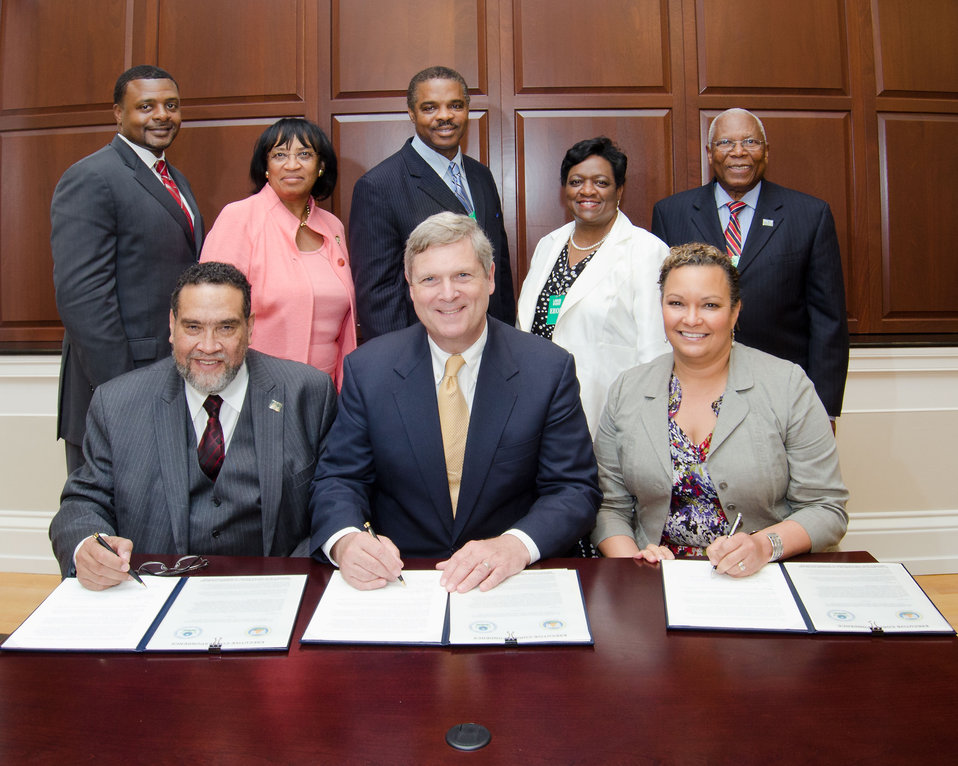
Left to right Tuskegee University President and Council of 1890 Universities Chair Gilbert Rochon, Agriculture Secretary Tom Vilsack and Administrator of the Environmental Protection Agency (EPA) Lisa Jackson sign the 2012 Memorandum of Understanding among the department, agency and council on Friday, June 29, 2012, in Washington, DC. It has been150 years since the first Morrill Act of 1862, which was signed by President Abraham Lincoln. The action established land-grant universities in every state and territory. The second Morrill Act of 1890 provided funding to designate separate institutions of higher learning for blacks in those states that did not open the doors of their universities to black students.